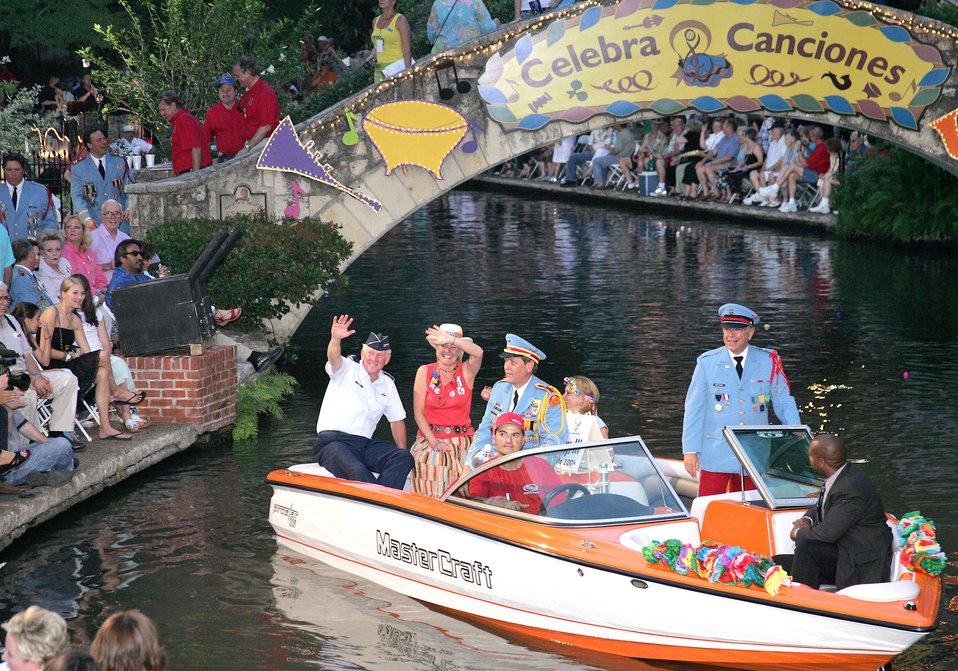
Viva Fiesta!

Gen. William R. Looney III, commander of Air Education and Training Command, and his wife Marilyn ride down the San Antonio River during the Texas Cavaliers River Parade on Monday, April 24, 2006. This parade is one of several events held during Fiesta, a 10-day celebration to honor the memory of the heroes of the Alamo and the Battle of San Jacinto in 1836. General Looney was this year's Fiesta military coordinator.